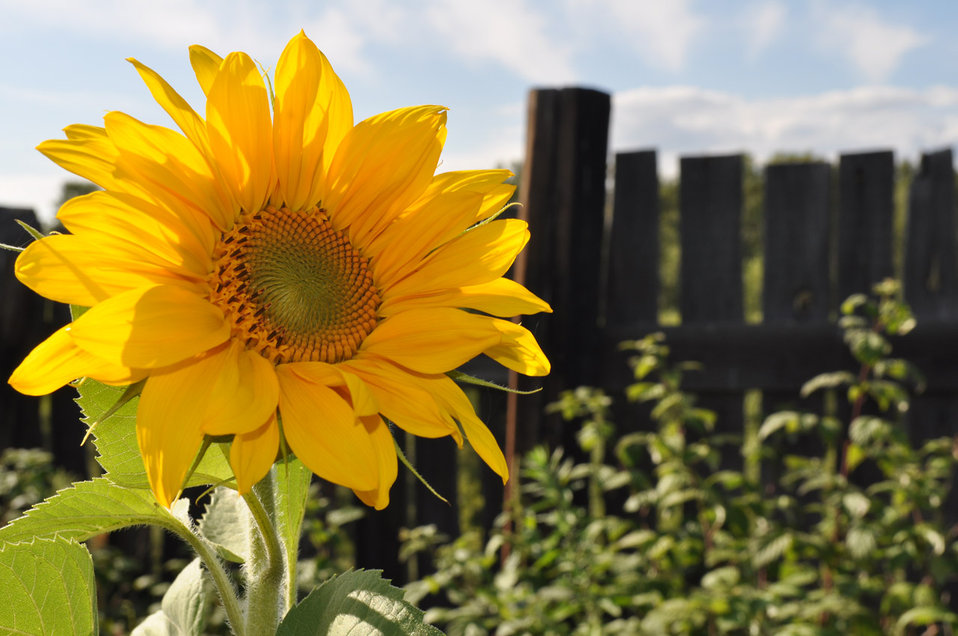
Sunflower on background sky.